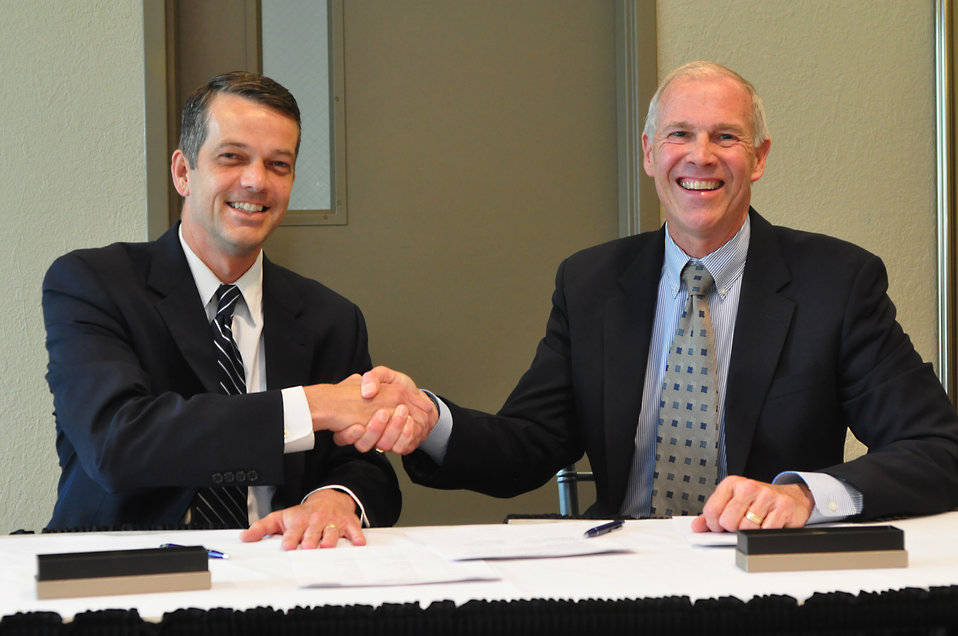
DOE and Isotek Partnering Agreement Signing 2014 Oak Ridge

14-046 DOE photo Lynn Freeny 4-8-2014 L to R Mark Whitney, Manager Oak Ridge Office of Environmental Management Department of Energy and James J. Bolon President and General Manager Isotek Systems, LLC Oak Ridge Tennessee